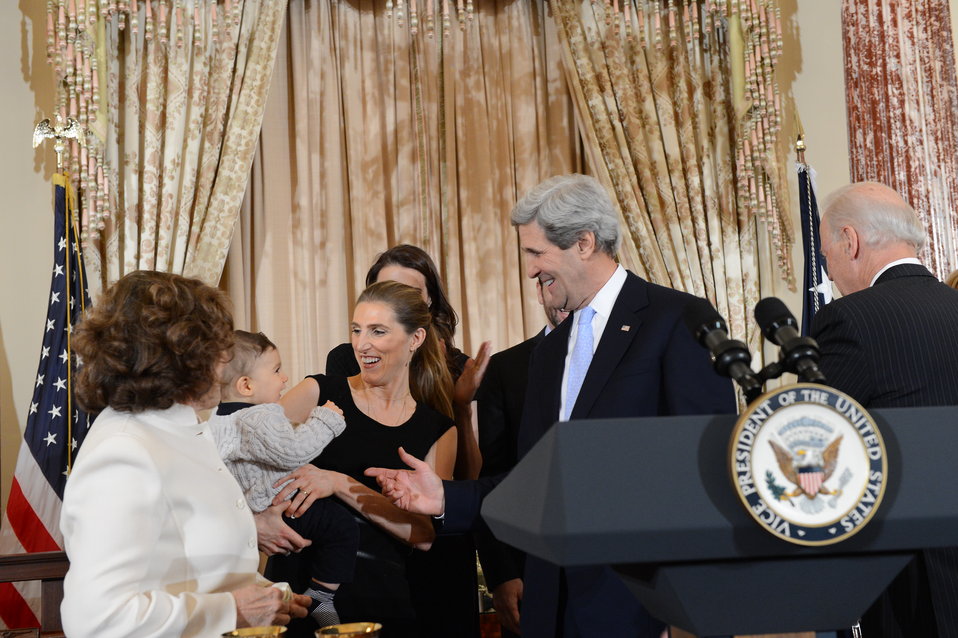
Secretary Kerry is Congratulated by his Family

U.S. Secretary of State John Kerry is congratulated by his family after he is ceremonially sworn in by U.S. Vice President Vice Biden at the U.S. Department of State in Washington, D.C., February 6, 2013. Also pictured is U.S. Vice President Joe Biden, right.